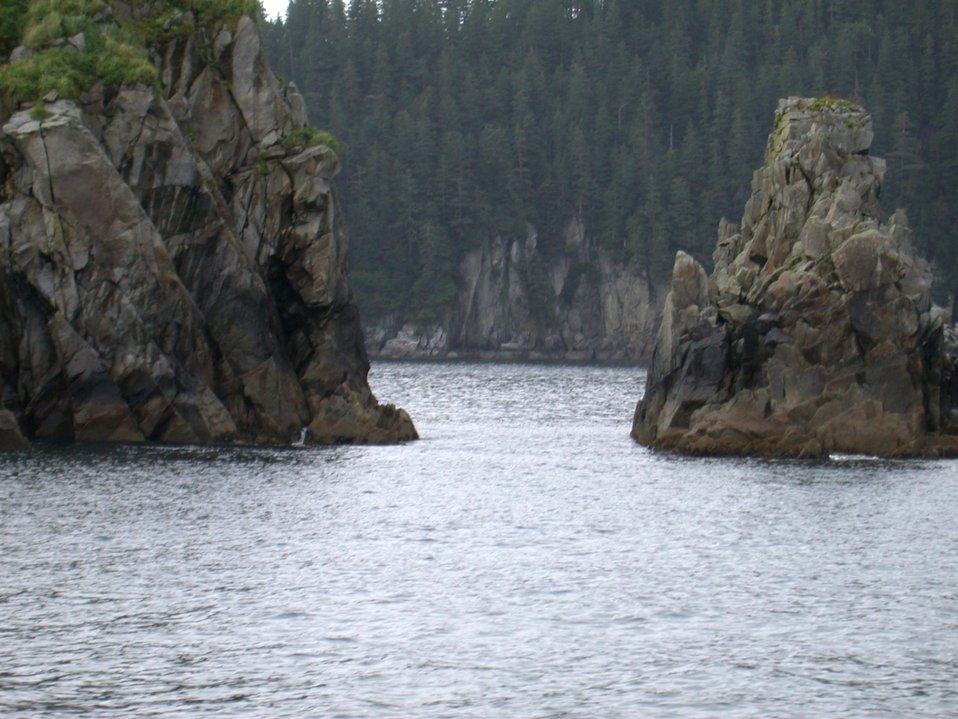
Chiswell Islands National Wildlife Refuge south of Seward.